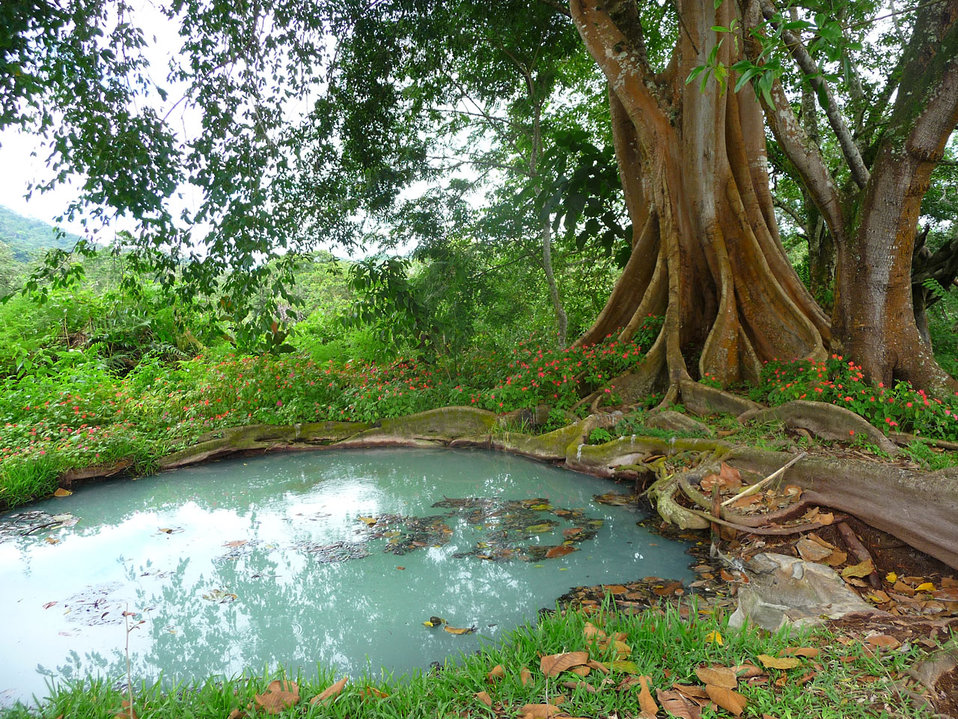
Moyobamba renaco

Devil's tree in moyobamba.